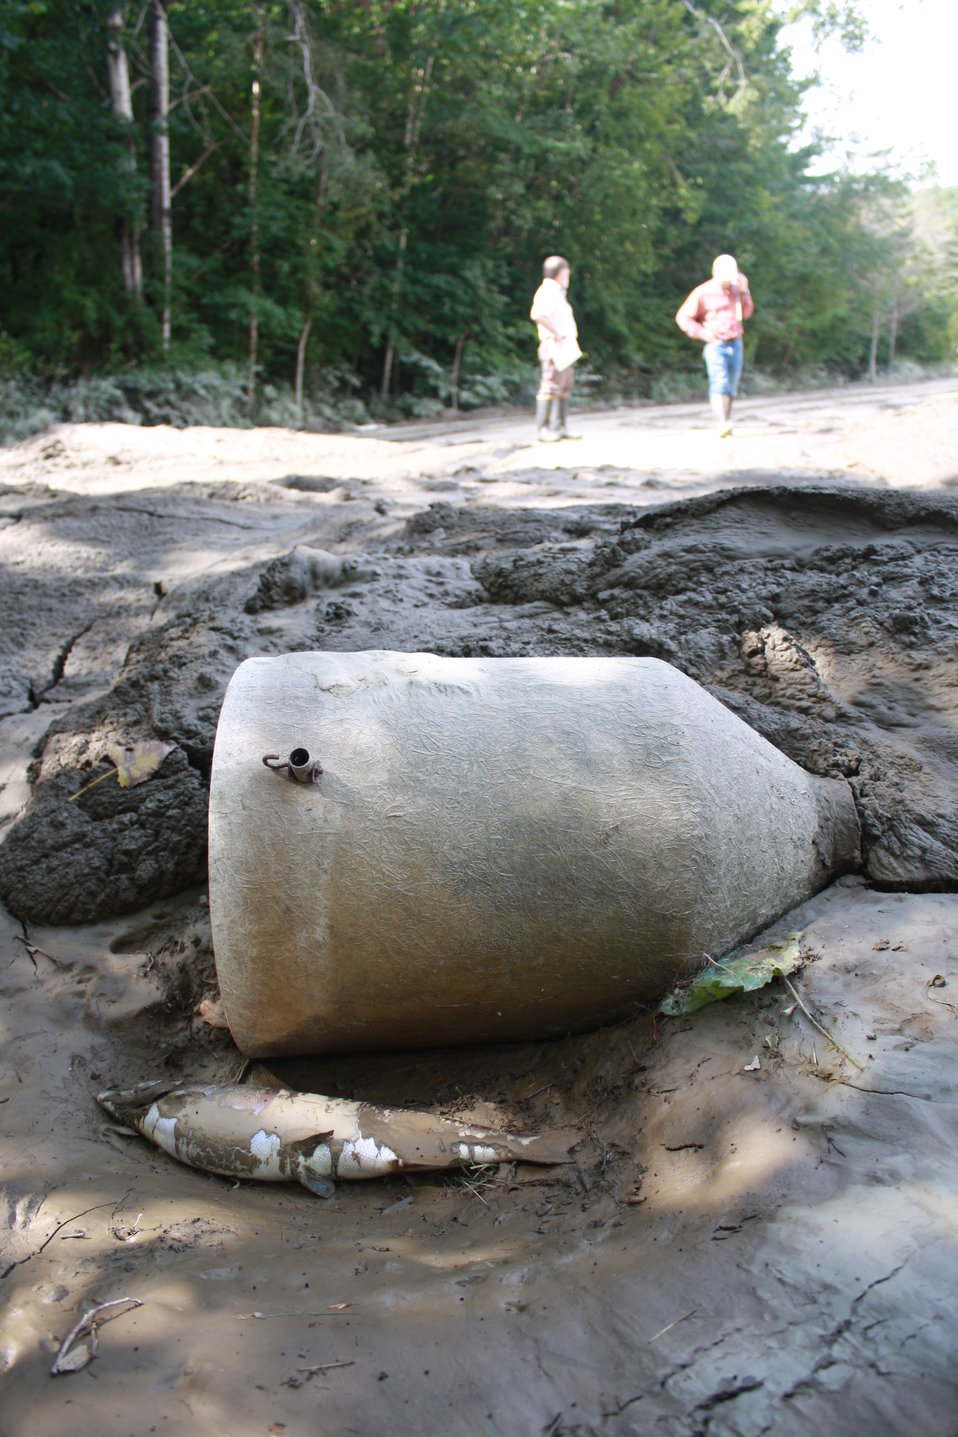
Debris, sediment and dead fish left by receding flood waters

Significant amounts of river sediment and debris were deposited on White River National Fish Hatchery grounds during the Hurricane Irene flood event. Some fish escaped and were left stranded by receding flood waters.